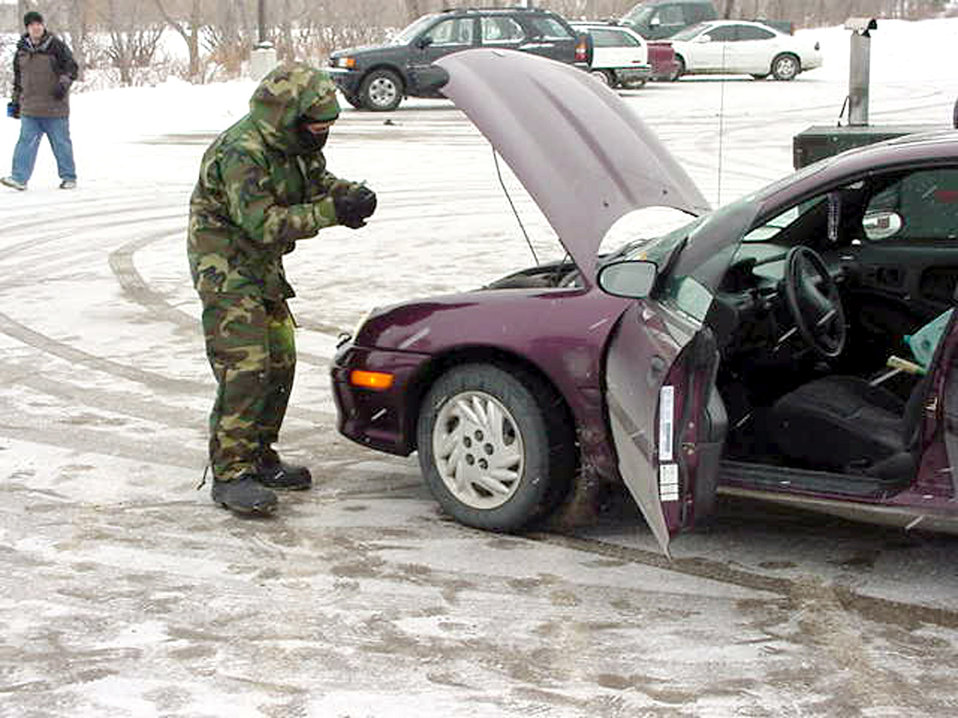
Cold inspection

GRAND FORKS AIR FORCE BASE, N.D. (AFPN) -- Senior Airman Lorie Hollis conducts a vehicle inspection at the main gate here. Airman Hollis is an installation entry controller with the 319th Security Forces Squadron.